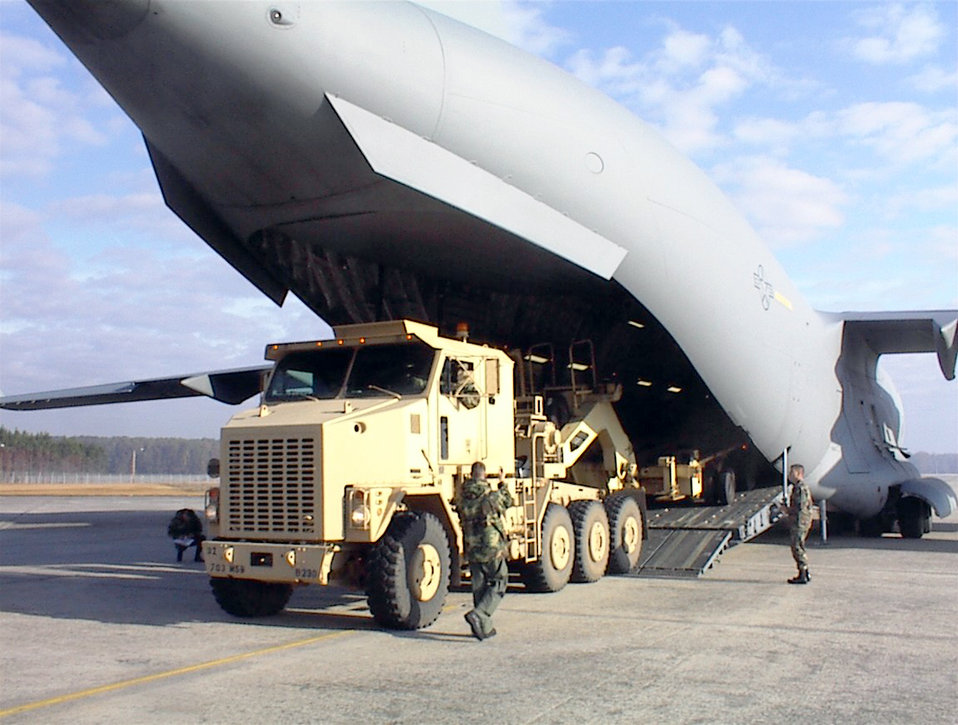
AMLOs help soldiers, Marines

HUNTER ARMY FIELD, Ga. -- An Air Force loadmaster from the 437th Airlift Wing at Charleston Air Force Base, S.C., directs the loading of an M1070 Heavy Equipment Transporter onto a C-17 Globemaster III here. The trailer is used to move Army M1 Abrams tanks. The exercise was part of a joint training program established by Maj. Edward Black, an Air Mobility Liaison Officer with the 3rd Infantry Division, to provide more realistic load training for the Air Force and more airlift equipment preparation training for the Army.